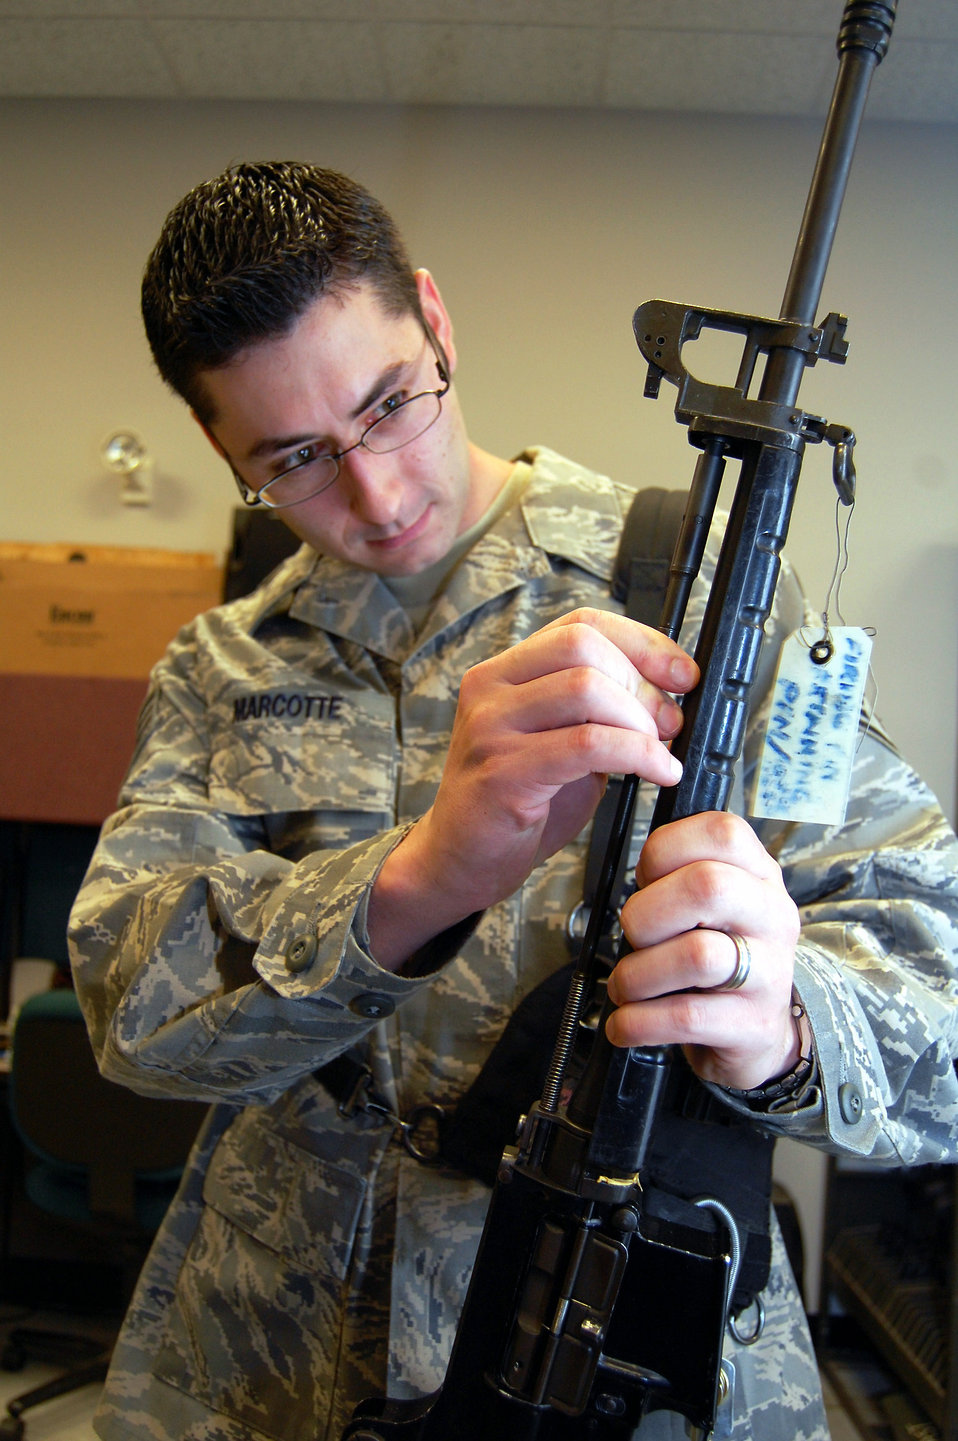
Expeditionary Center armory fires up training for Airmen

Staff Sgt. Ryan Marcotte inspects the forward assembly of a T-65 rifle while working in the armory Sept. 22 at Fort Dix, N.J. Sergeant Marcotte is the Air Force Expeditionary Center armory combat arms instructor. He and three other Airmen manage 48 different weapons systems and 153 different types of foreign weapons in their armory -- the most foreign weapons than any armory in the Air Force. The weapons they care for support more than 7,000 students annually who attend the center's expeditionary courses.